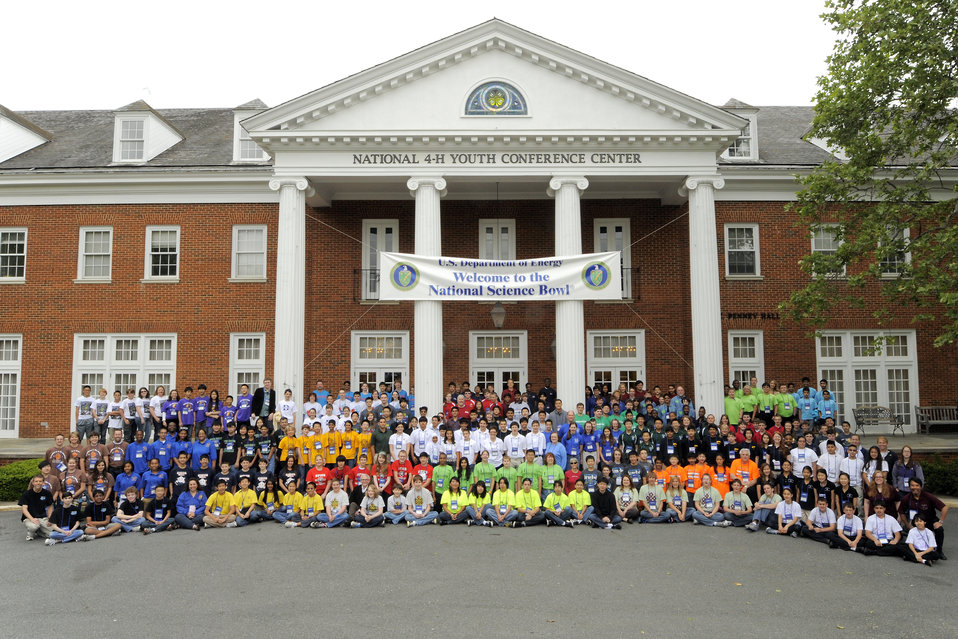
2012 National Science Bowl Middle School teams on April 28, 2012.